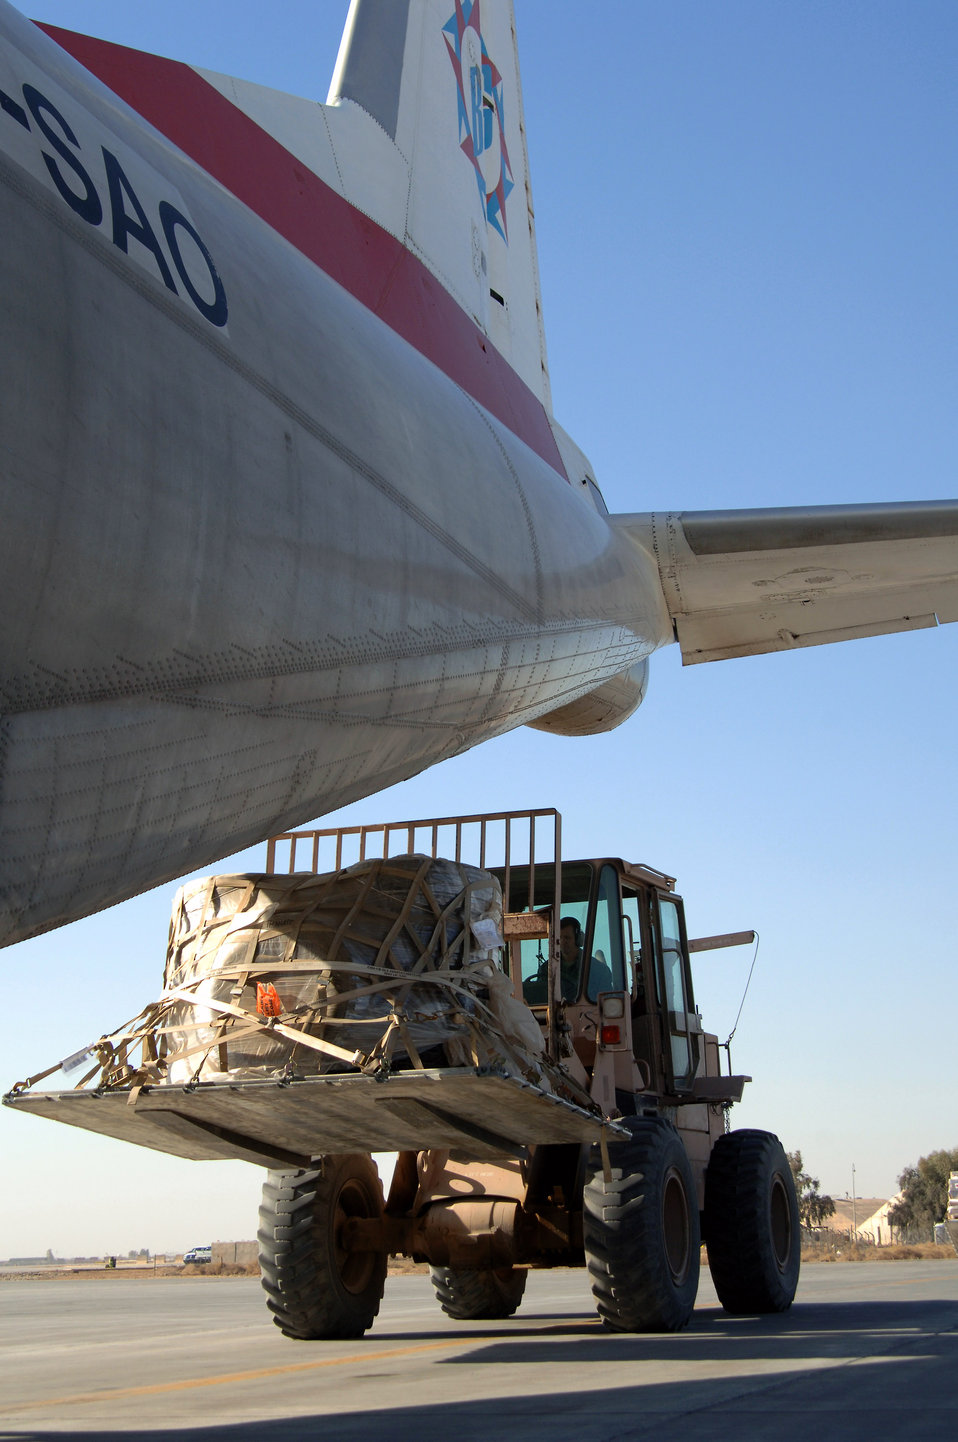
Aerial porters keep convoys off the road

An aerial port flight ramp service technician from the 332nd Expeditionary Logistics Readiness Squadron moves a load of cargo into a commercial aircraft at Balad Air Base, Iraq. By being able to transport cargo, personnel and supplies by aircraft, fewer military vehicle convoys are required to transport cargo over dangerous roads.